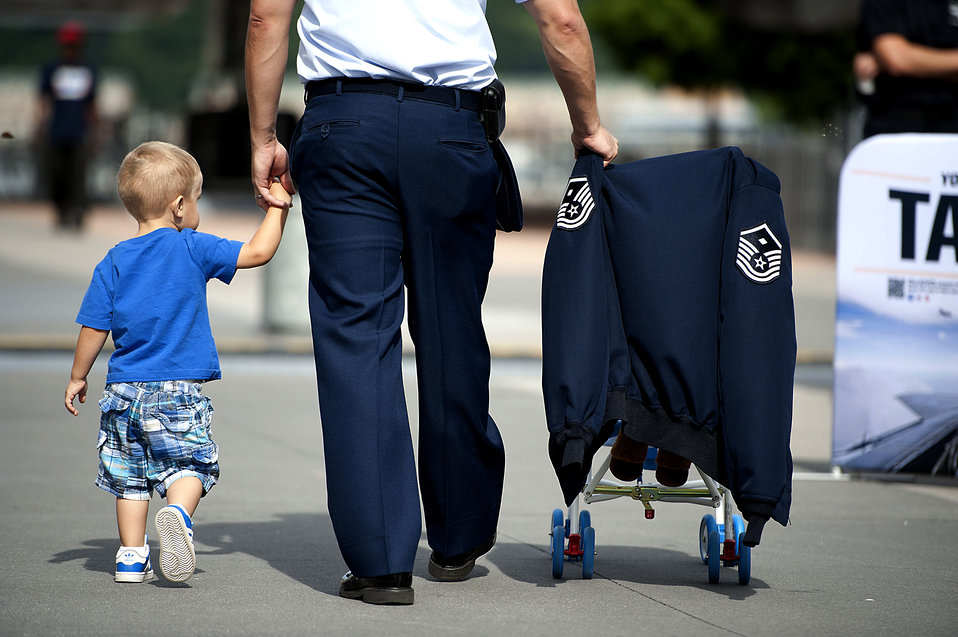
2012 Air Force Week NYC

First Sgt. George Baker, of the 313th Recruiting Squadron in Syracuse, N.Y., walks with his son, Hunter, 2, through the exhibit area on Pier 86 during Air Force Week 2012 in New York City on Aug. 19.